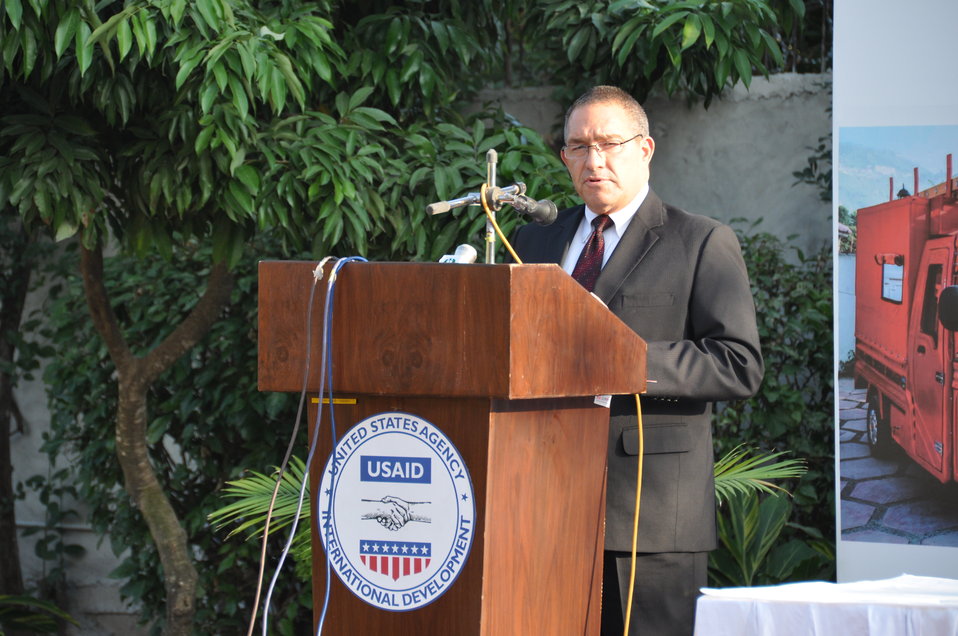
United States Government Strengthens PESCO Field Operations 16